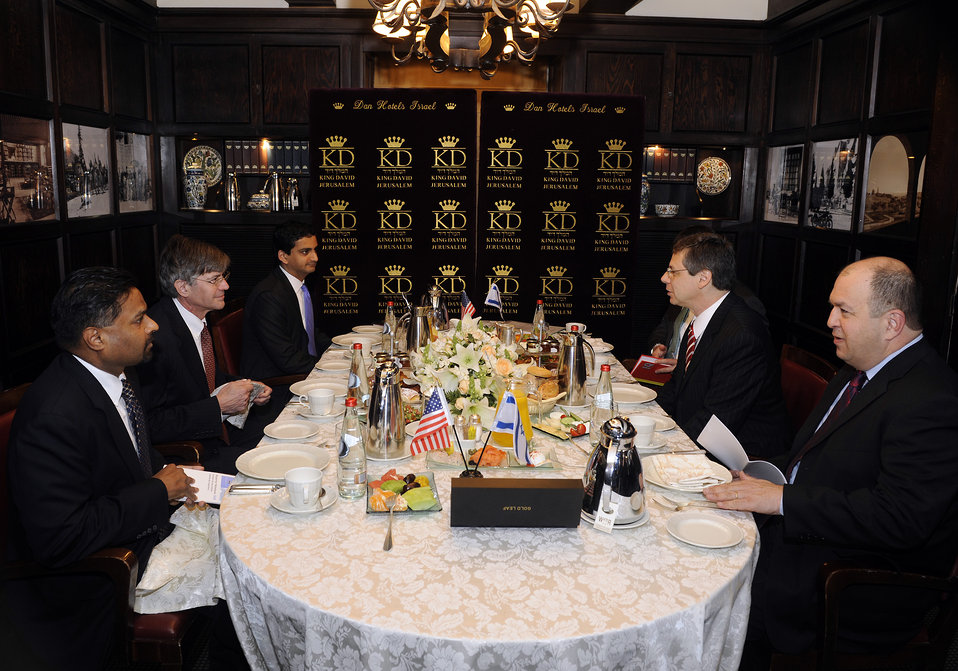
Deputy Secretary of State James B. Steinberg With Israeli Deputy Foreign Minister

Deputy Secretary of State James B. Steinberg eats breakfast with Deputy Foreign Minister Danny Ayalon at the King David Hotel in Jerusalem, February 25, 2010.